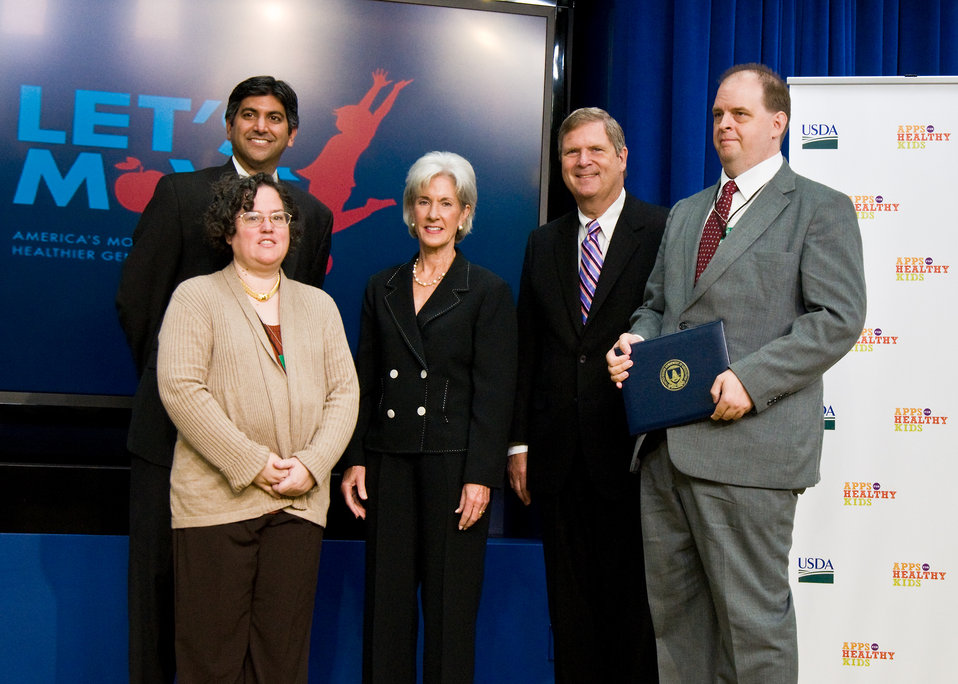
Aneesh Chopra, White House Chief Technology Officer, Health and Human Services Secretary Kathleen Sebelius and Agriculture Secretary Tom Vilsack present the Popular Choice Award to John and Ana Blackwell, Beavercreek, Ohio the developers of the app 'Tony's Plate Calculator,' of The Apps for Healthy Kids competition at the White House, in Washington, DC, on Wednesday, September 29, 2010. The Apps for Healthy Kids competition is part of First Lady Michelle Obama’s Let’s Move campaign to end childhood obesity within a generation. The competition challenges software developers, game designers, students and other innovators to develop fun and engaging software tools and games to urge children, especially “tweens” (children ages 9-12) – directly or through their parents – to eat better and be more physically active. 'Tony's Plate Calculator,' is an online tool that helps you calculate the nutritional values for a single item, an entire recipe or a full day's worth of food. 'Tony's Plate Calculator' is a powerful, flexible tool to let you know what is going on your plate. USDA Photo 10di1506-146 by Bob Nichols.